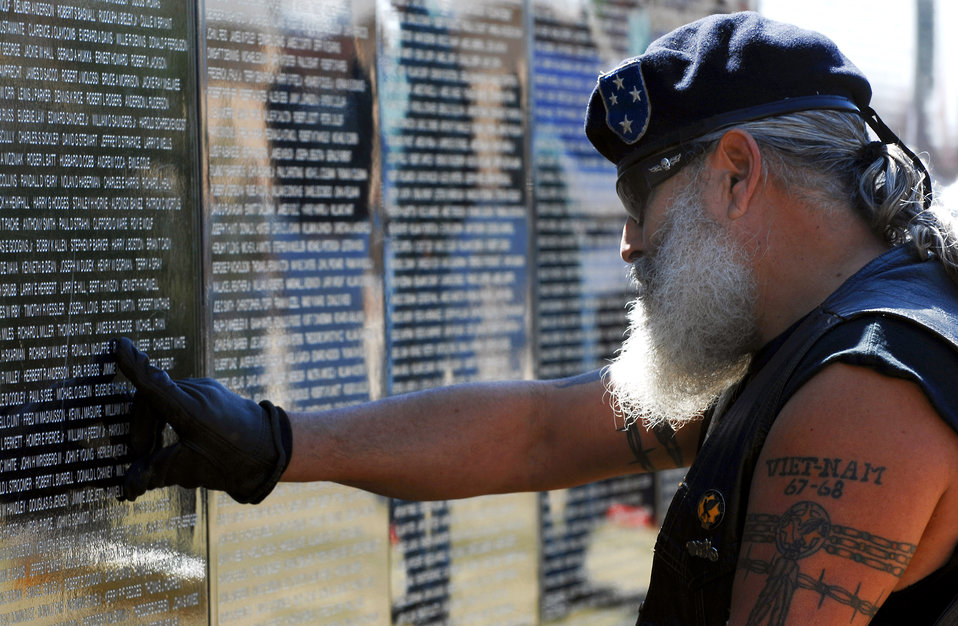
A traveling tribute to fallen heroes

Veteran Rudy Garcia stops at a spot on the traveling Vietnam Wall March 15 to remember and honor the memories of his friends who gave their lives during the Vietnam War. The Wall was on display in Clovis, N.M., home of Cannon Air Force Base, from March 14 to 18.